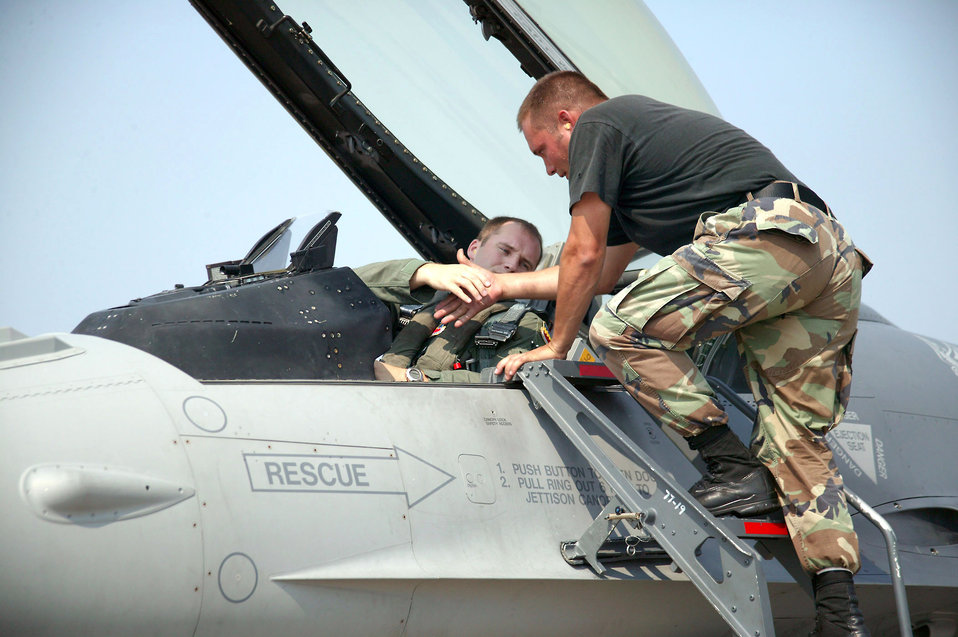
Shaw hosts Operation Iron Thunder

Capt. Ben Russo shakes hands with Staff Sgt. Jake Kempel before taking off July 18 in support of Operation Iron Thunder, an exercise at Shaw Air Force Base, S.C. Captain Russo is with the 77th Fighter Squadron and Sergeant Kempel is a crew chief with the 77th Aircraft Maintenance Unit.